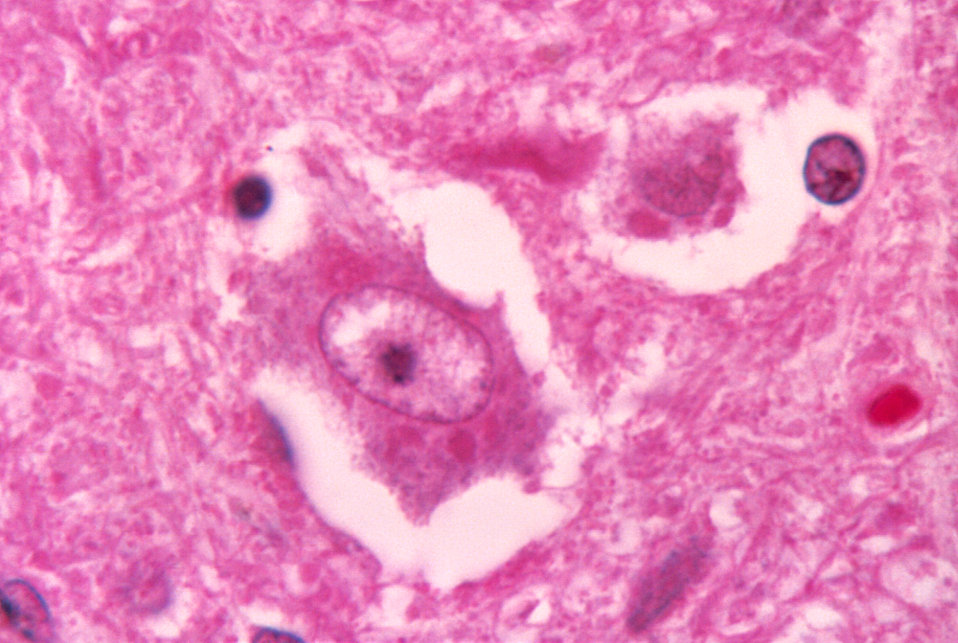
Photomicrograph of H&E stained brain tissue from a rabies encephalitis patient.